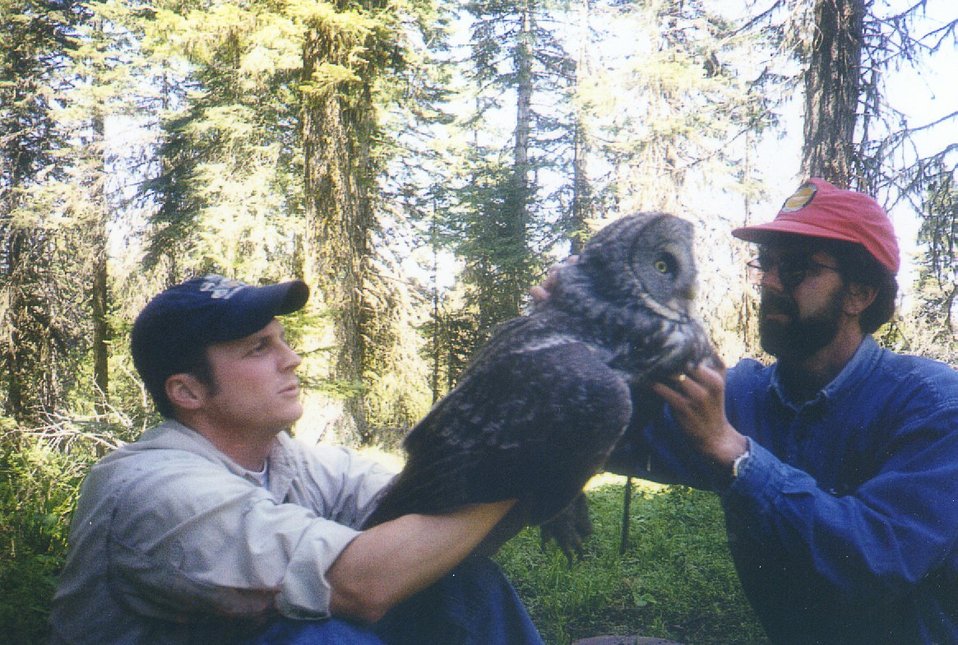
Biologists attach a radio caller to a Great Gray Owl (Strix nebulosa) to monitor the birds movements in the forest.